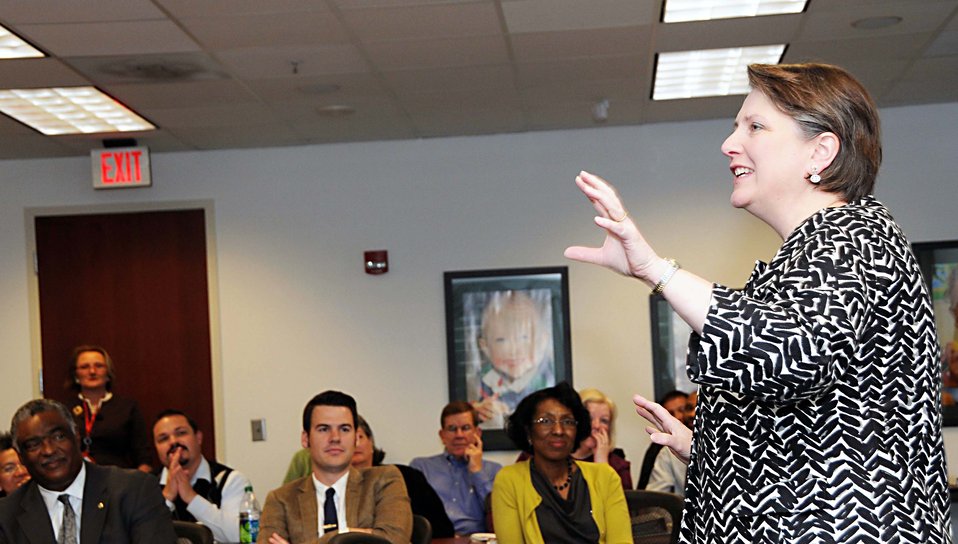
Agriculture Deputy Secretary Kathleen Merrigan visits with Food and Nutrition Services Southeast Regional Administrator, staff and State Women Infant Children (WIC) Directors in Atlanta, GA on Wednesday, November 2, 2011. Secretary Merrigan talked about the Department and Food and Nutrition Programs and answered questions from those in attendance.